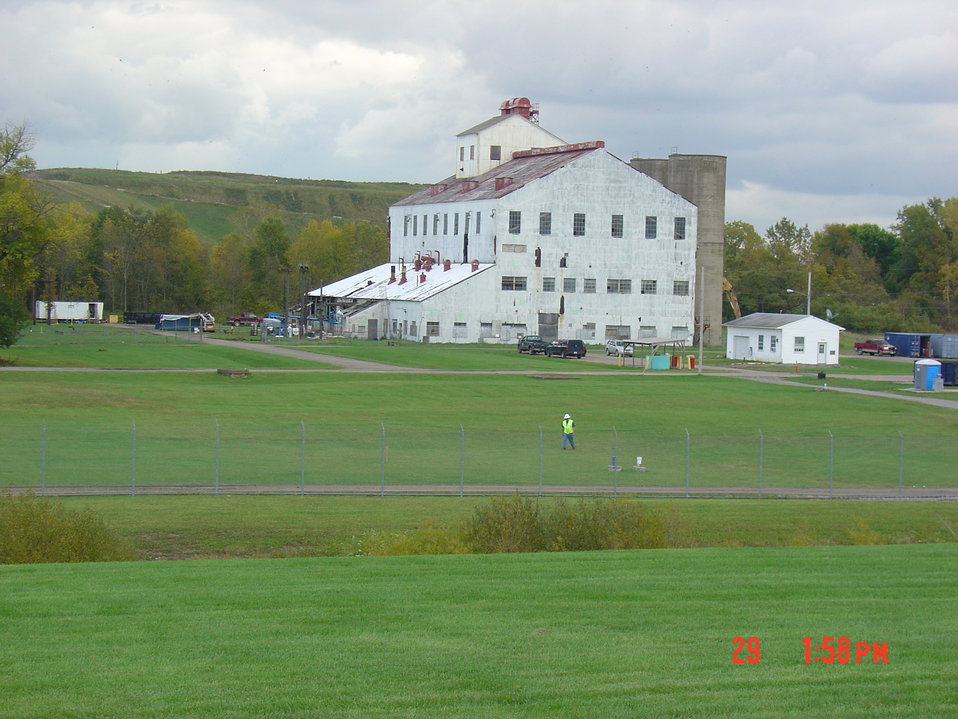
BLDG 401 NW CORNER

Activities from the Niagara Falls Storage Site, which is associated with the former Lake Ontario Ordnance Works. Formerly Utilized Sites Remedial Action Program (FUSRAP), a program initiated in 1974 to identify, investigate and clean up or control sites that were part of the Nation's early atomic energy and weapons program. Activities at the sites that are eligible for FUSRAP were conducted by Manhattan Engineer District (MED) or the Atomic Energy Commission (AEC), both predecessors of the Department of Energy (DOE). The U.S. Army Corps of Engineers was assigned management of FUSRAP by Congress in 1997.